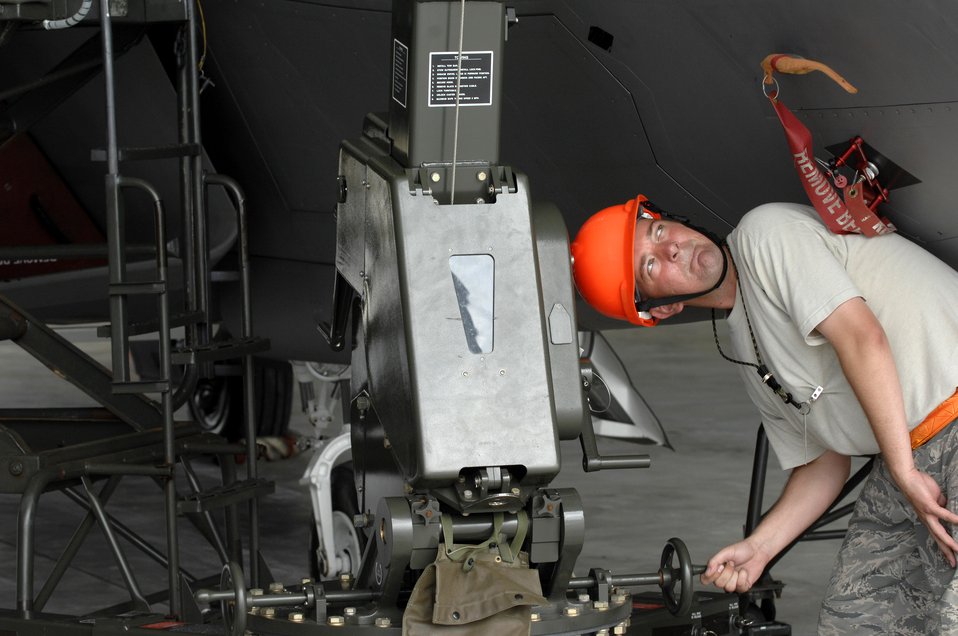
Egress technicians keep Raptors covered

Staff Sgt. Terry Vickery operates an east- west hoist during installation of an F-22 canopy Feb. 18 at Andersen Air Force Base, Guam. The Raptors are deployed from Elmendorf AFB, Alaska, to Guam for three months as the Pacific's theater security package. The stealth-fighters, along with associated maintenance and support personnel, comprise the 90th Fighter Squadron and will participate in various exercises that provide routine training in an environment different from their home station. Sergeant Vickery is an egress technician deployed from Elmendorf AFB and assigned to 36th Expeditionary Maintenance Squadron.